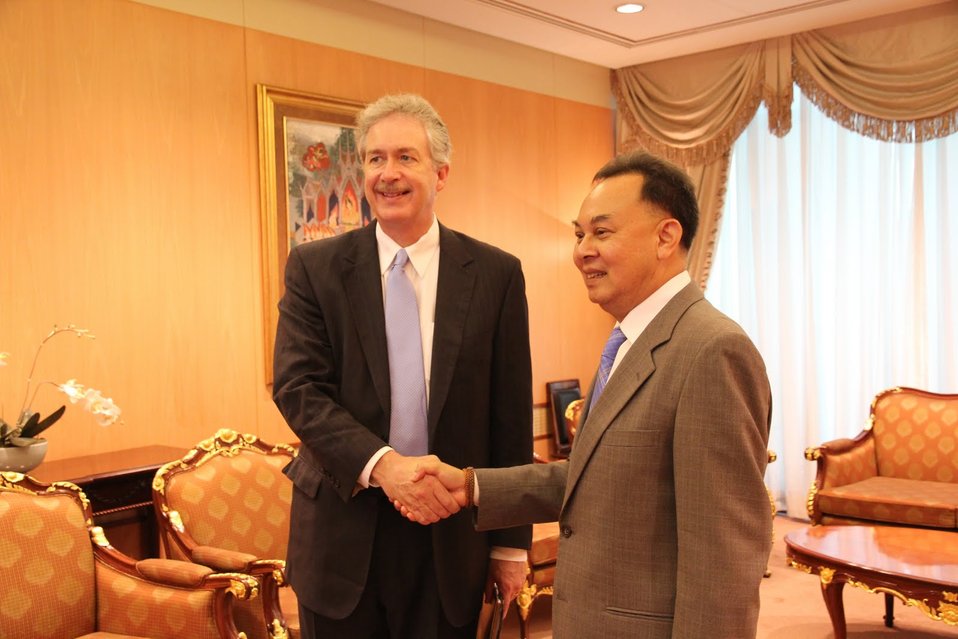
Under Secretary Burns Shakes Hands With Thai Foreign Minister Kasit Piromya

Under Secretary for Political Affairs William J. Burns shakes hands with Thai Foreign Minister Kasit Piromya, at the Thai Ministry of Foreign Affairs in Bangkok, Thailand, on July 16, 2010.